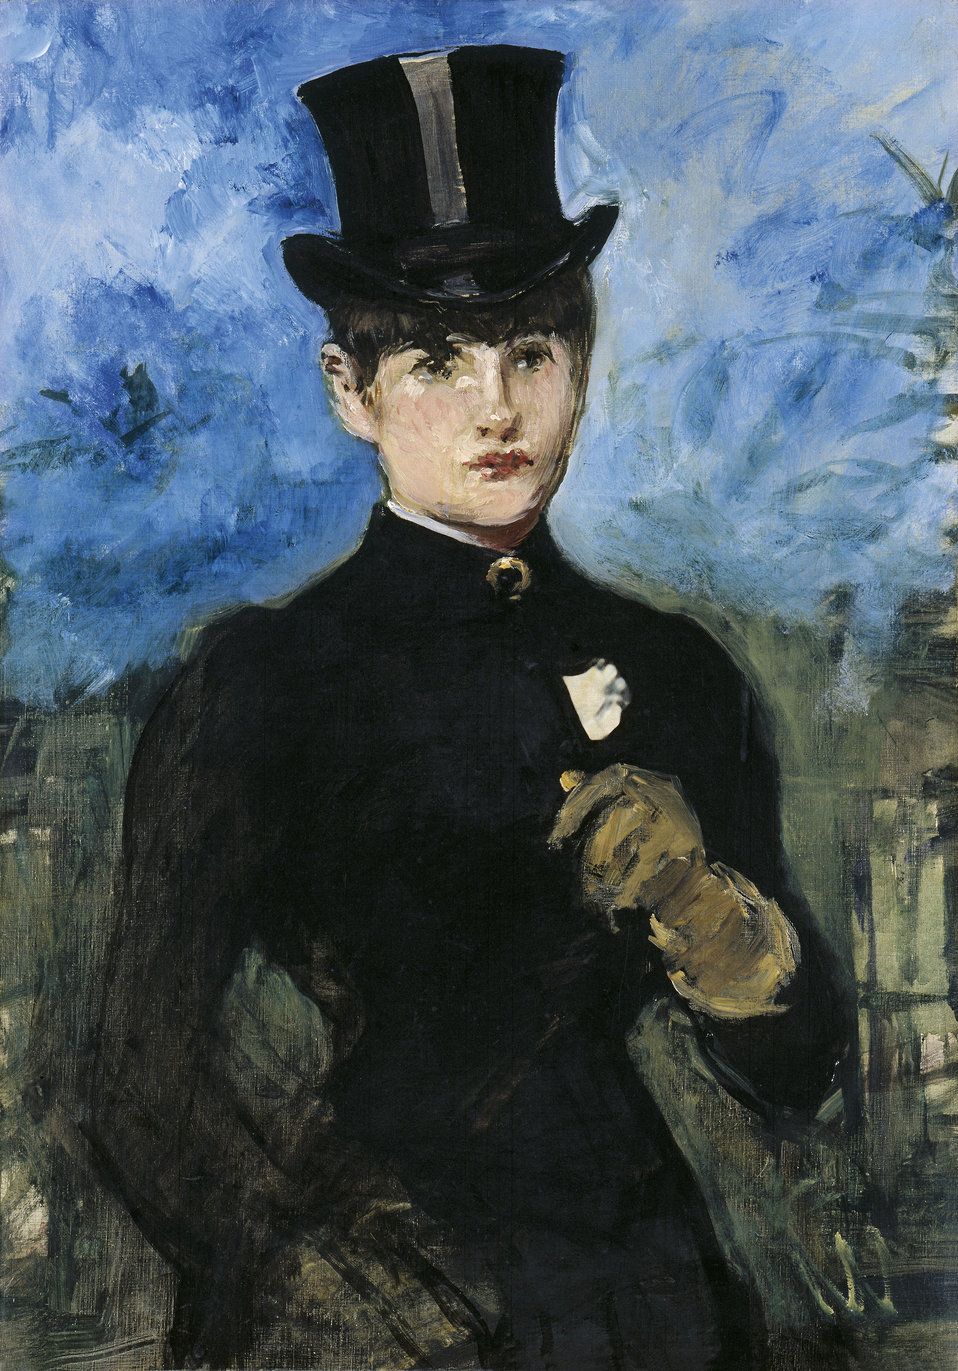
'Summer' or 'The Amazon', by Edouard Manet